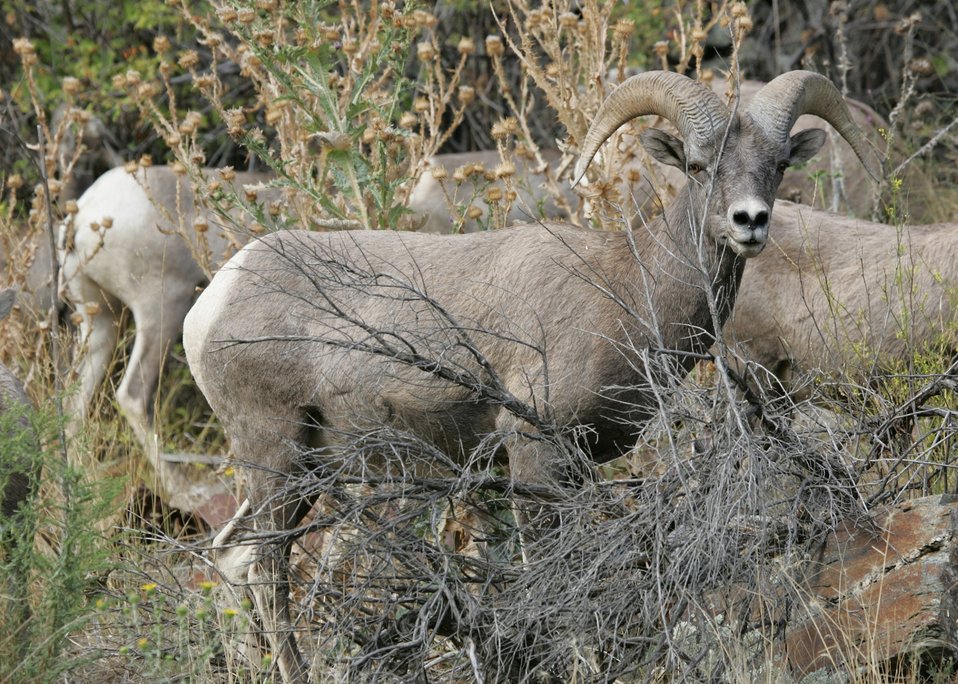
Bighorn sheep in the Connor Creek watershed in eastern Oregon.